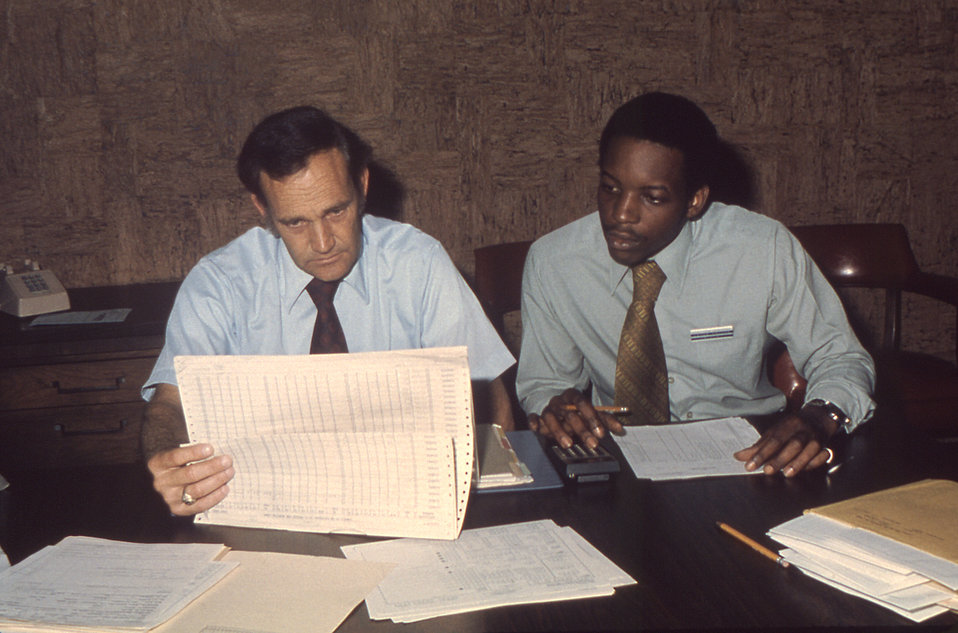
This historic image depicted two Centers for Disease Control (CDC) public health advisers, as they were working on a pilot study known as SENIC (Study on the Efficacy of Nosocomial Infection Control), which measured the accuracy of a system, designed by Robert W. Haley, M.D., that detected hospital-acquired infections through the analysis of medical records. SENIC was ultimately used to measure the change of infection rates in a random sample of U.S. hospitals. In this picture the two men appear to be doing an in-line quality control analysis, by comparing the agreement of duplicate reviews of the same medical records.